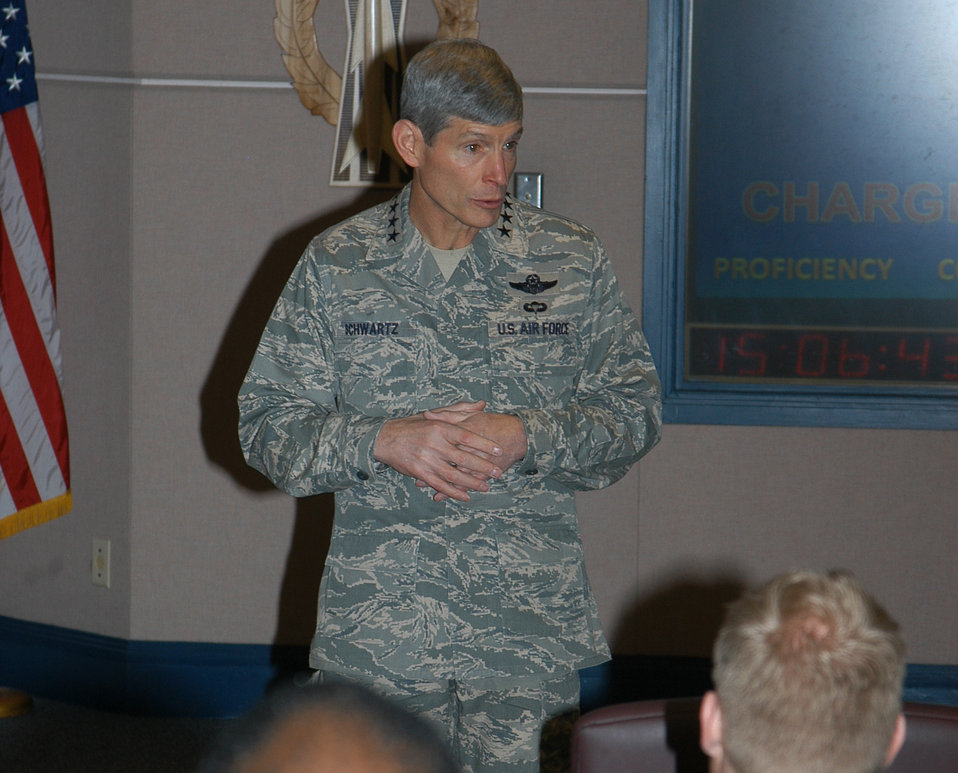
CSAF visit

Air Force Chief of Staff Gen. Norton Schwartz addresses missile combat crewmembers during their pre-departure briefing Dec. 25, 2009, at F.E. Warren Air Force Base, Wyo. The general and Mrs. Schwartz visited the base during Christmas to thank Airmen in 24-hour work centers and to reinforce the Air Force's commitment to the nuclear enterprise.